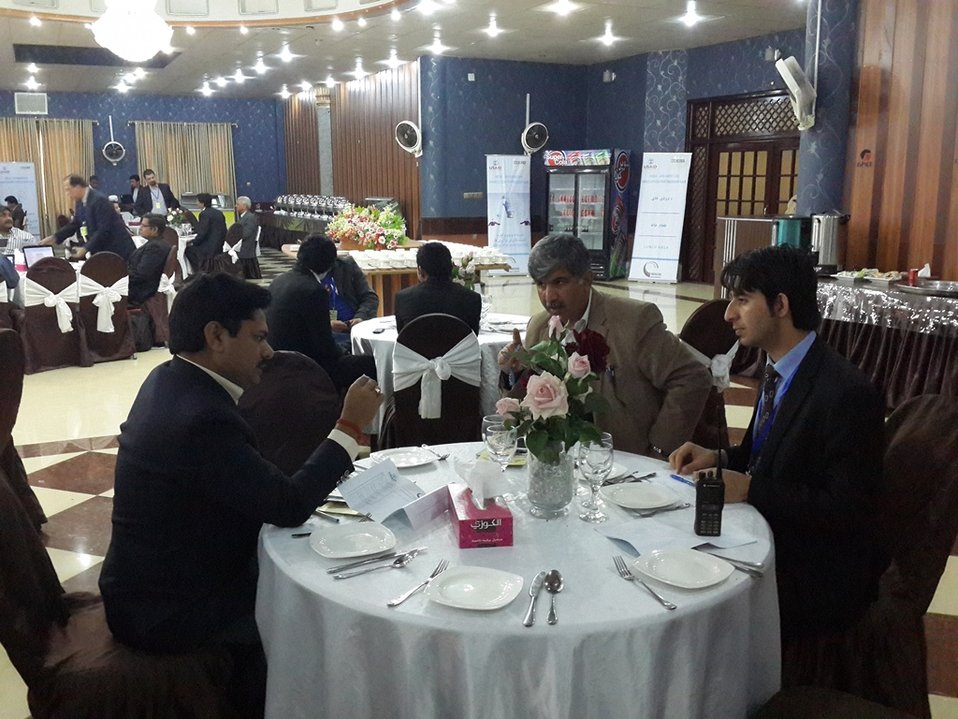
FAIDA Innovation Conference March 4. 2014